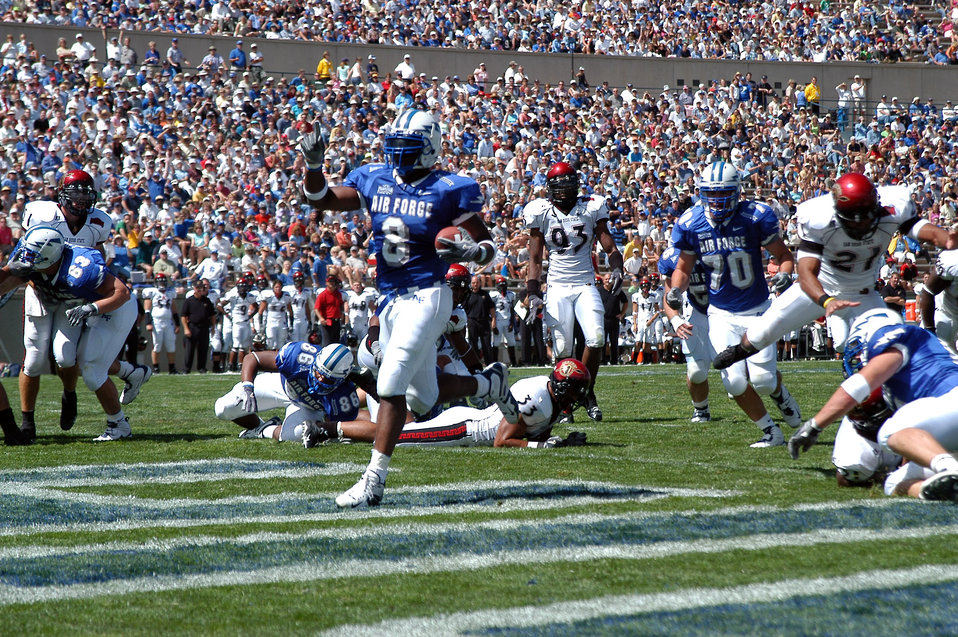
Falcons win

U.S. AIR FORCE ACADEMY, Colo. -- Air Force fullback Jacobe Kendrick scores one of his four rushing touchdowns Sept. 10 against San Diego State University. The junior from Midland, Texas, ran for a career-high 128 yards on 26 carries. The Falcons beat the Aztecs 41-29.